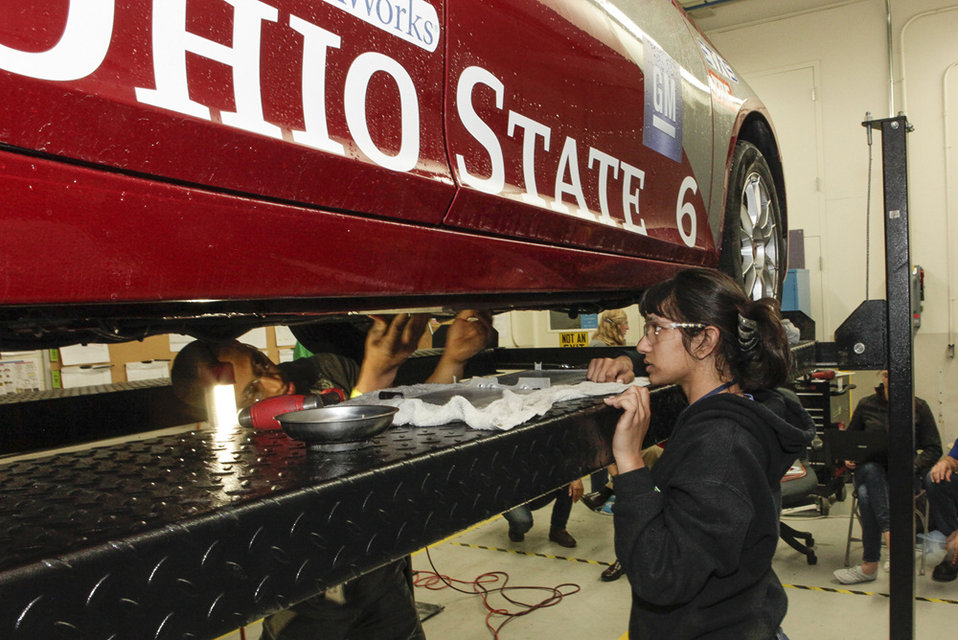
During Year 3 of EcoCAR 2, students continue to improve their vehicles, refining them into near-production prototypes. The two-part final took place in Milford, Michigan, and Washington, D.C., over 10 days. Pictured here, students from the Ohio State University work on their car in the garage at GM’s Milford Proving Grounds. The Ohio State University team was the first to pass the 300-point safety tech inspection, a requirement before the team could begin an on-road safety evaluation. | Photo courtesy of EcoCAR 2.